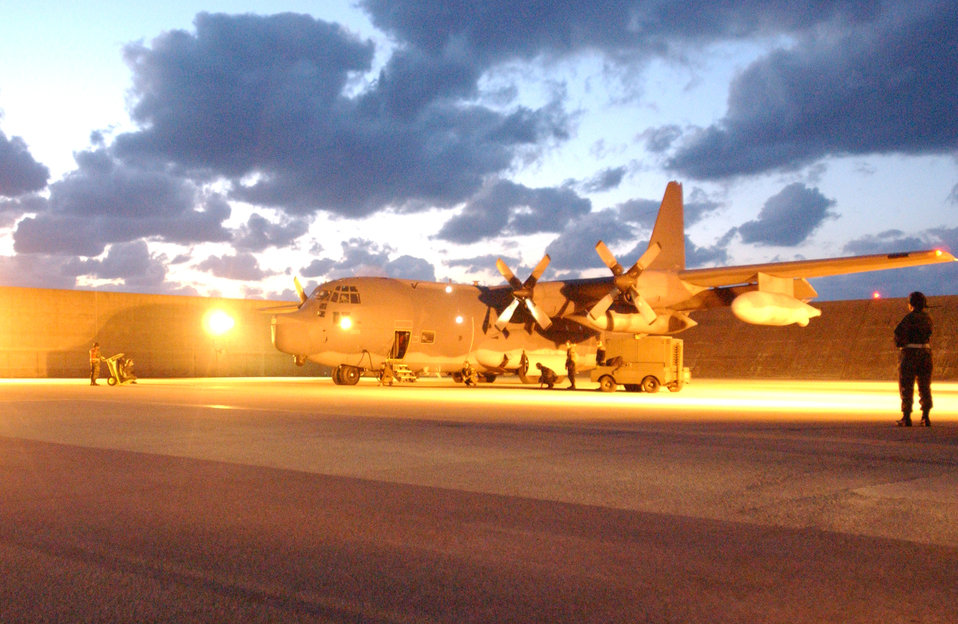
Disaster relief efforts

KADENA AIR BASE, Japan -- An Air Force C-130 Hercules prepares for takeoff after being loaded with two aircraft pallets of packaged meals bound for Southeast Asia as part of disaster relief following a 9.0-magnitude earthquake that struck Dec.26 off the coast of Indonesia. The quake caused tsunami waves that have affected 12 countries and have killed more than 100,000 people. More than 3,000 cases of meals and four aircraft pallets of fresh water were processed through the cargo area here Dec. 29. The 18th Wing is providing relief supplies and personnel to help with the humanitarian effort.